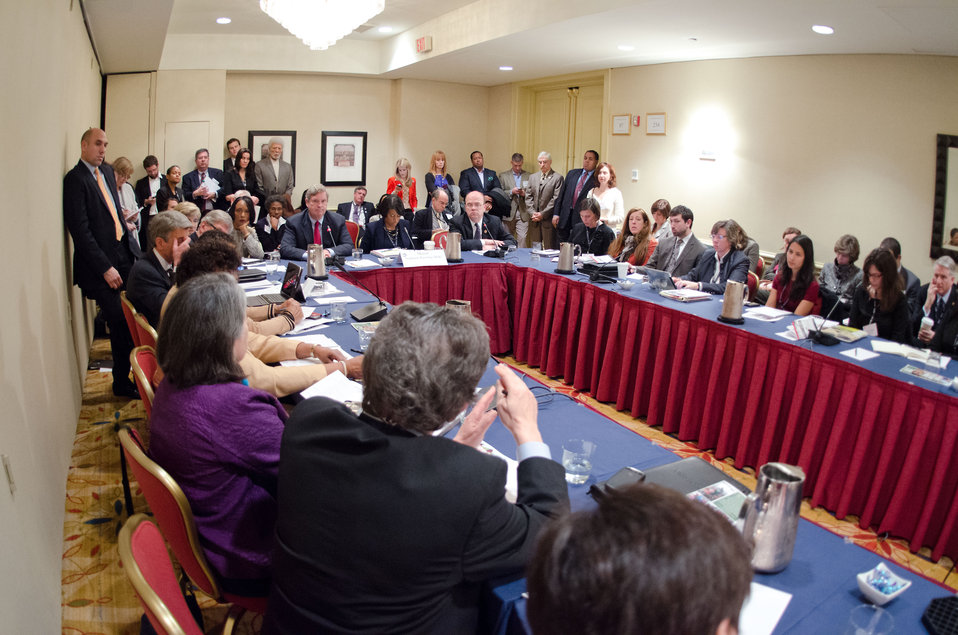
Agriculture Secretary Thomas Vilsack, (at end table with red tie) listens and responds to questions from mayors, during the United States Conference of Mayors 81st Winter Meeting, Food Policy session in Washington D.C., on Thursday, Jan 17, 2013. Some of his responses highlighted the Supplemental Nutrition Assistance Program (SNAP), Know your Farmer Know your Food (www.usda.gov/wps/portal/usda/usdahome?navid=KYF COMPASS) and many other ways that rural America makes a difference.